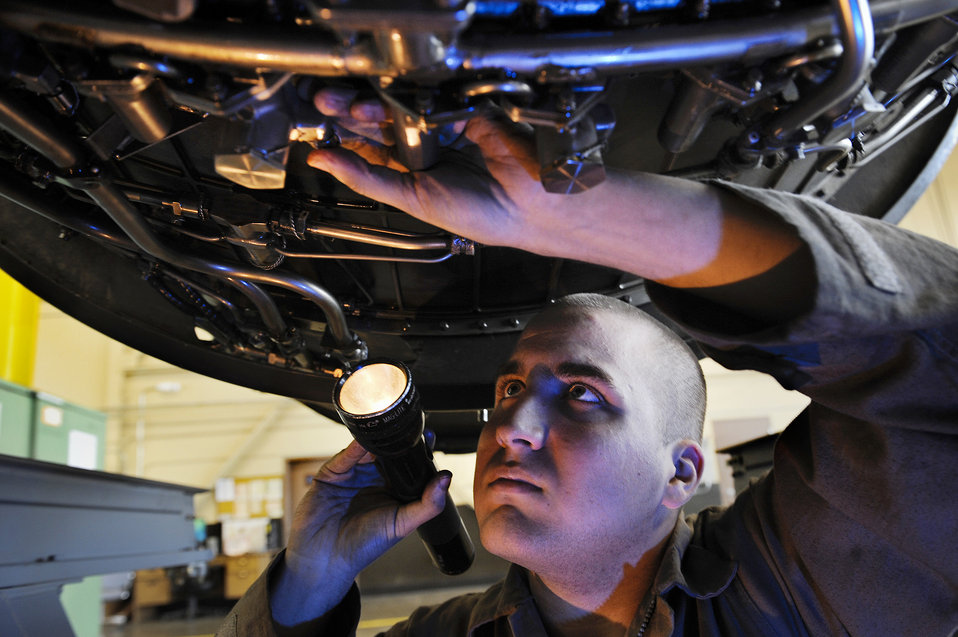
Going counter-clockwise

Airman 1st Class Jonathan Bettenhausen inspects a B-1B Lancer engine for possible broken safety wires and missing parts March 25, 2010, at Ellsworth Air Force Base, S.D. He is an aerospace propulsion technician with the 28th Maintenance Squadron. The B-1 engines are inspected after every 100 hours of flying.